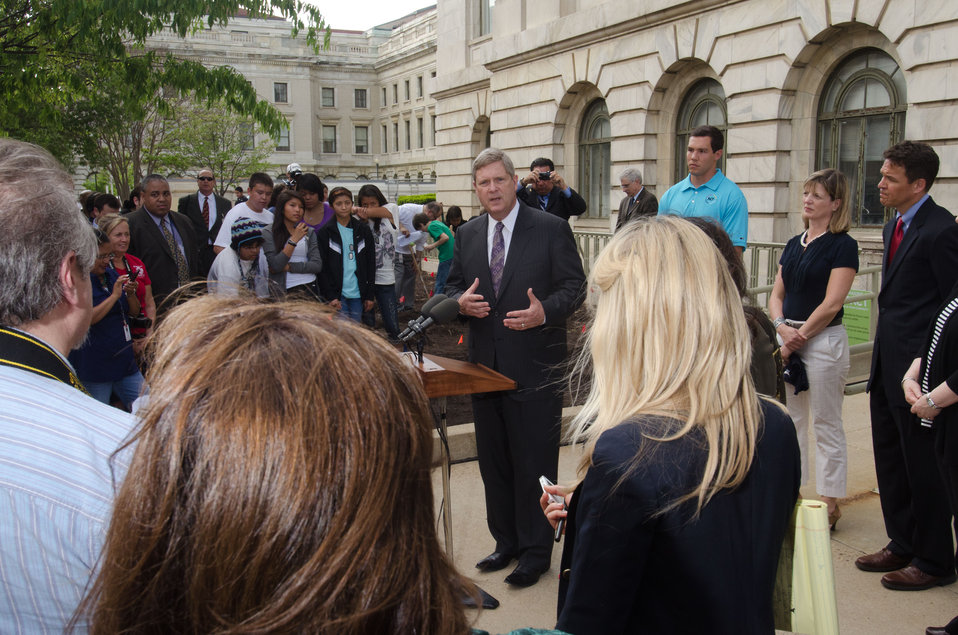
Agriculture Secretary Tom Vilsack (at podium) answers questions after kicking off the first planting of the Roots of American Agriculture garden, part of the Headquarters’ People’s Garden on Wednesday, April 27, 20ll in Washington, DC. To support the event was St. Louis Rams Quarterback Sam Bradford (blue shirt) who earlier encourage Native American Youth to pursue a healthy lifestyle. The seeds used in the garden are vegetable seeds that are indigenous to North America. Bradford is a citizen of the Cherokee Nation.